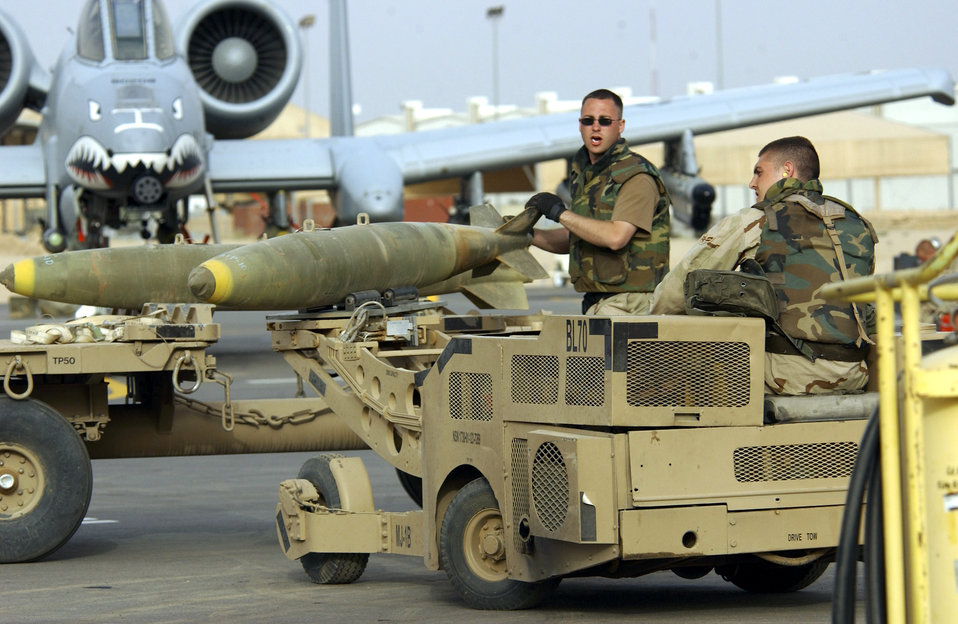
Load crew

OPERATION IRAQI FREEDOM -- Armament personnel from the 332nd Air Expeditionary Wing load munitions onto A-10 Thunderbolt II, March 29, 2003. From a forward-deployed location, these fighters will fly missions into Iraq in support of Operation Iraqi Freedom. Operation Iraqi Freedom is the multi-national coalition effort to liberate the Iraqi people, eliminate weapons of mass destruction and to end the regime of Saddam Hussien.